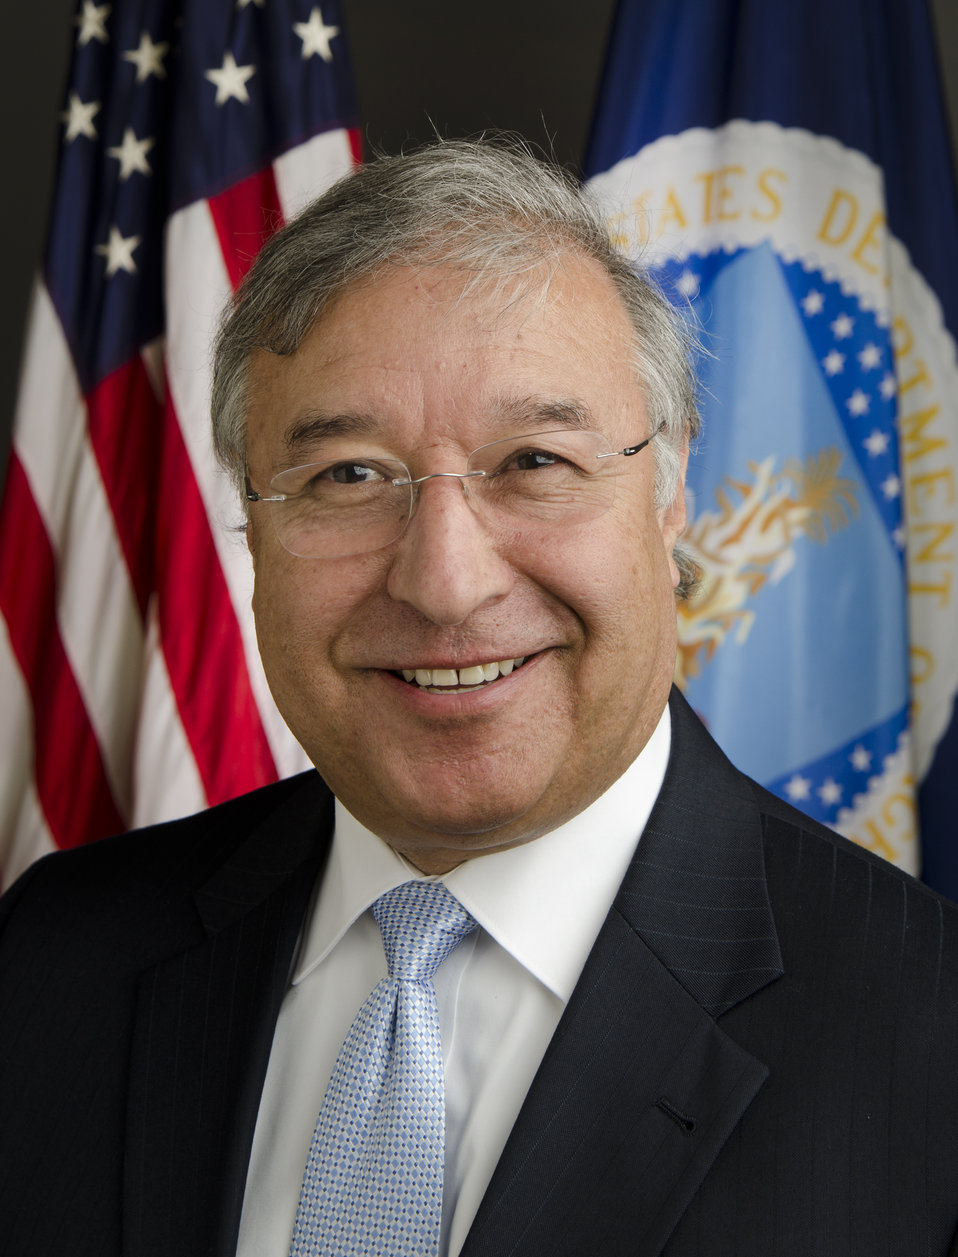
20140113-RHS-KJH-3413 Rural Housing Administrator Tony Hernandez

U.S. Department of Agriculture (USDA) Rural Housing Service (RHS) Administrator Tony Hernandez in Washington, D.C. on Monday, Jan. 13, 2014.